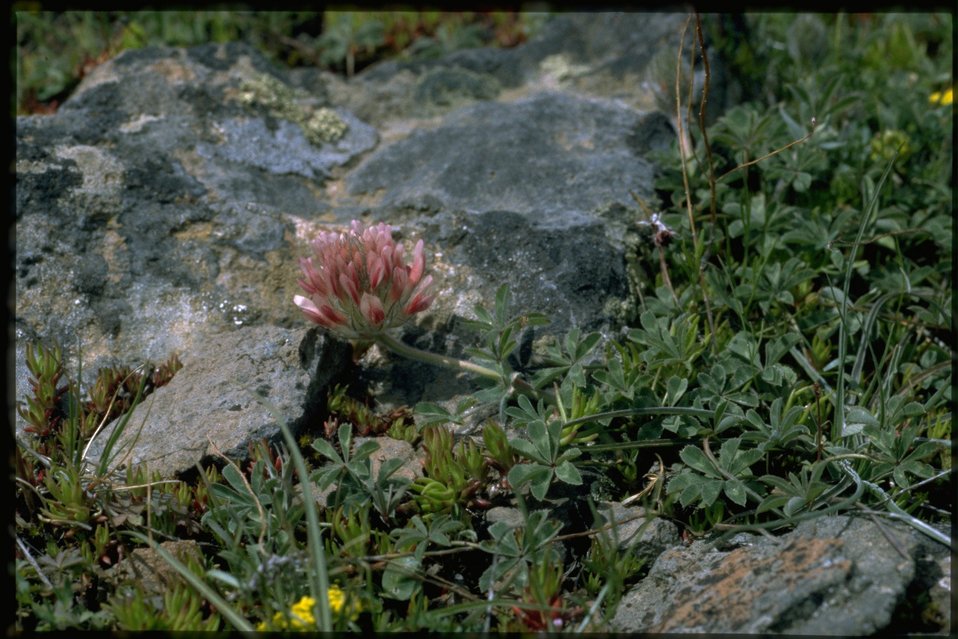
Farshot of Big-headed clover, Trifolium Macrocephalum.